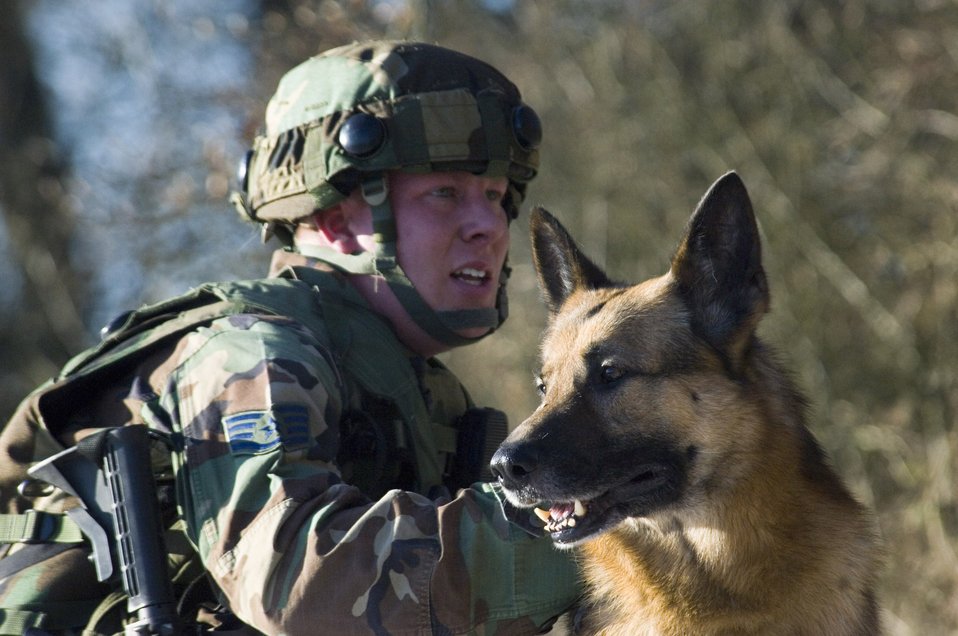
Creek Defender

BAUMHOLDER, Germany (AFPN) -- Staff Sgt. Brandon Tillman and Allan rest after searching for improvised explosive devices during foot patrol training. They are with the 52nd Security Forces Squadron at Spangdahlem Air Base, Germany, and participated in Creek Defender in southwestern Germany earlier this month.